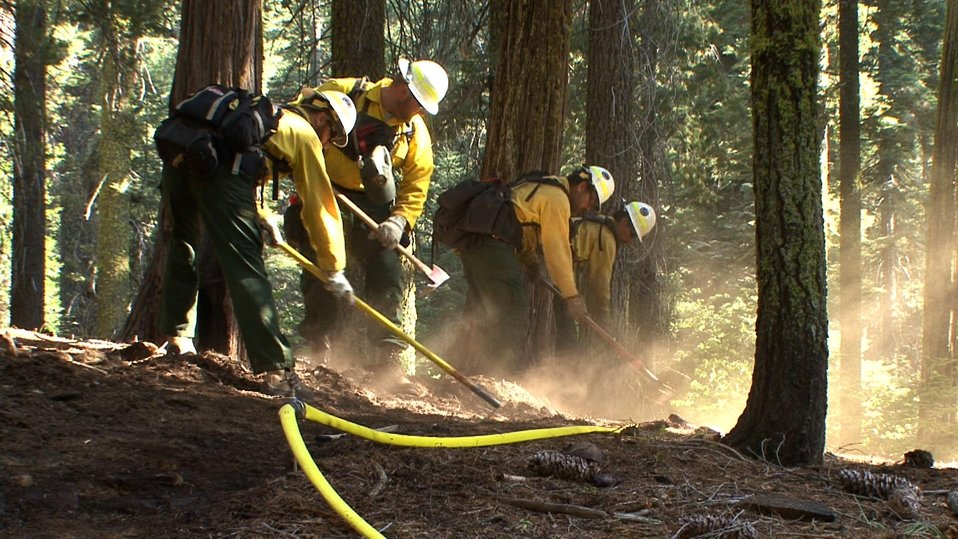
National Park Service (NPS) fire crews dig hand line along a sprinkler hose as part of a multi-pronged approach to protecting the Giant Sequoias against the Rim Fire. The Rim Fire in the Stanislaus National Forest near in California began on Aug. 17, 2013 and is under investigation. The fire has consumed approximately 149, 780 acres and is 15% contained.